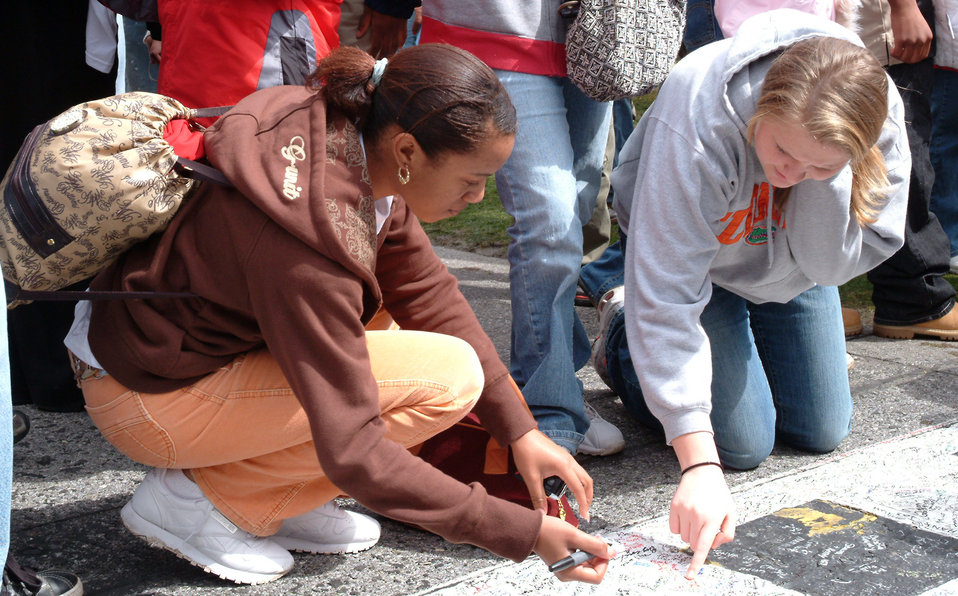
General swears in new Airmen at Daytona 500 race

Newly enlisted Airmen Sabrina Robinson (left) and Krystal Brant sign on another